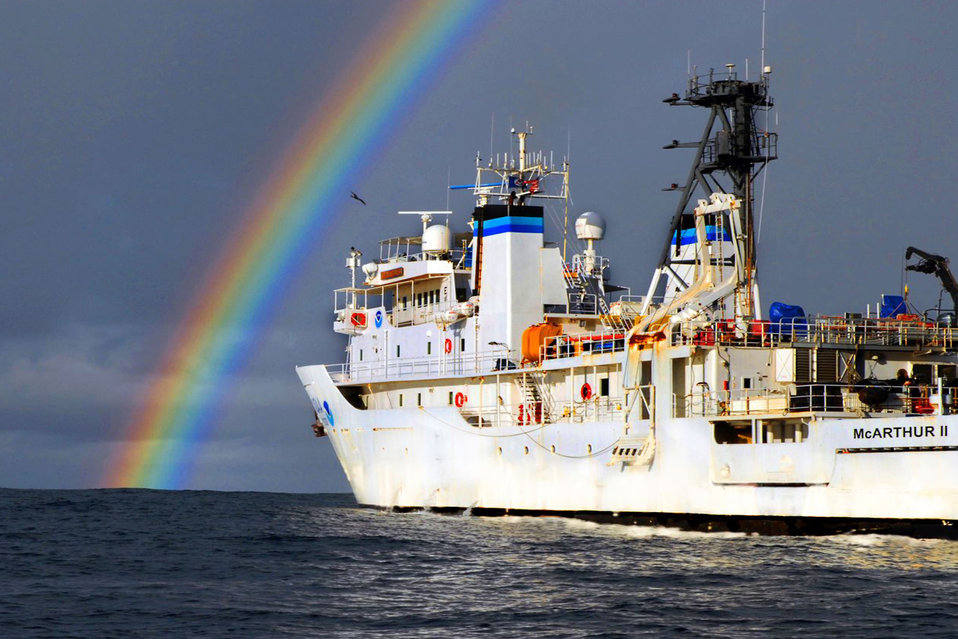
The NOAA Ship McArthur II watches the remnants of Hurricane Henrietta fade into the distance as it conducts research operations 250 miles SW of Manzanillo, Mexico, in support of NMFS SWFSC Stenella Abundance Research Project Line Transect and Ecosystem (STAR-LITE) Cruise, 2007. Dr. Eric Archer was the chief scientist for this STAR-LITE cruise.